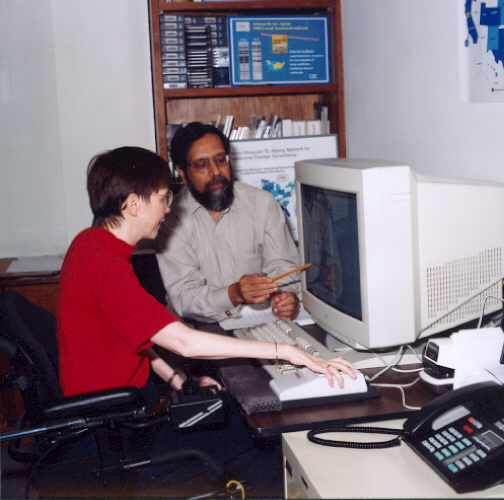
Susan Hunter and Dr. Balasubramanian Swaminathan.